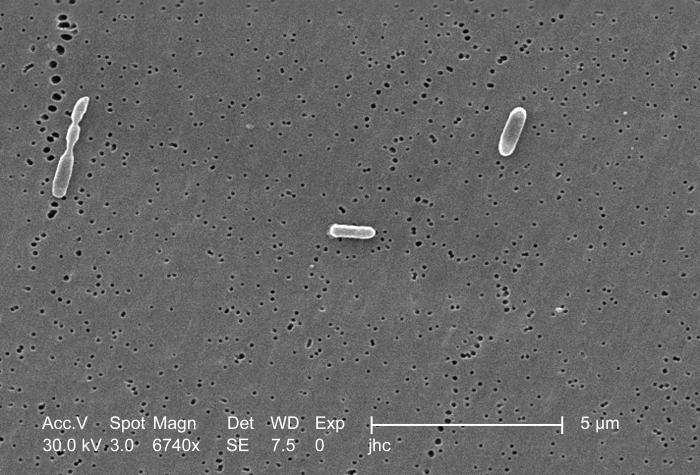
Magnified 6,740x, this scanning electron micrograph (SEM) depicted three Ralstonia mannitolilytica bacteria, which were harvested from a pure culture.